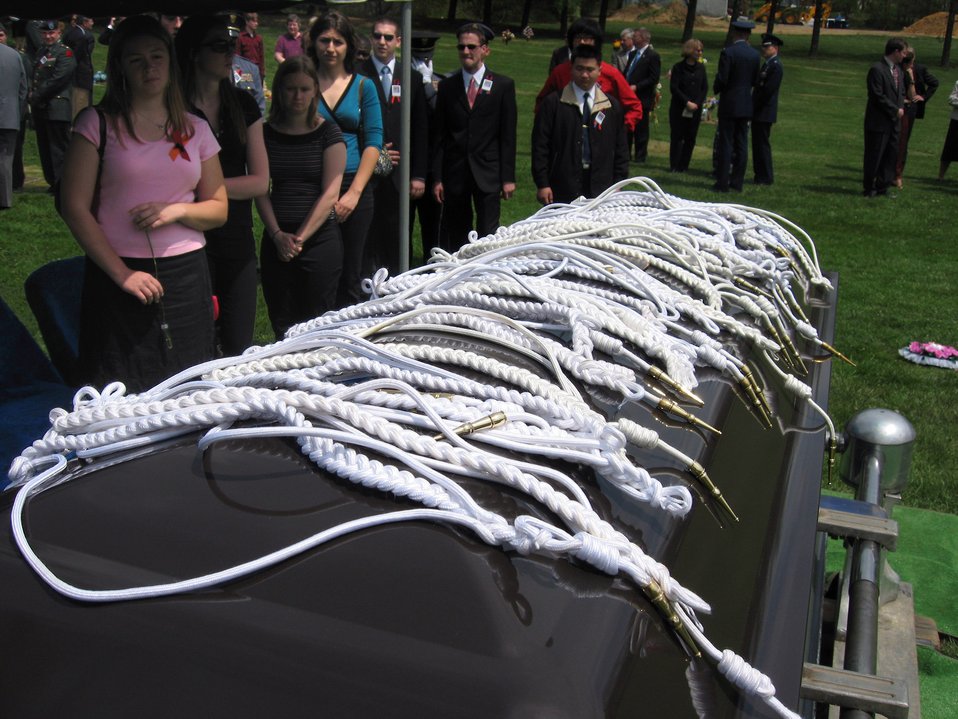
Virginia Tech corps of cadets pay honors to one of their own

The Virginia Tech Corps of Cadets paid honors to one of their classmates in Blacksburg, Va., April 25. Cadet Matthew La Porte, a sophomore in Air Force ROTC Detachment 875 and the Virginia Tech Corps of Cadets, was one of the 32 students and faculty killed during the shooting incident at the school April 16. At the end of the service, Cadet La Porte's classmates placed their white Presidential Citation cords on their classmate's casket.